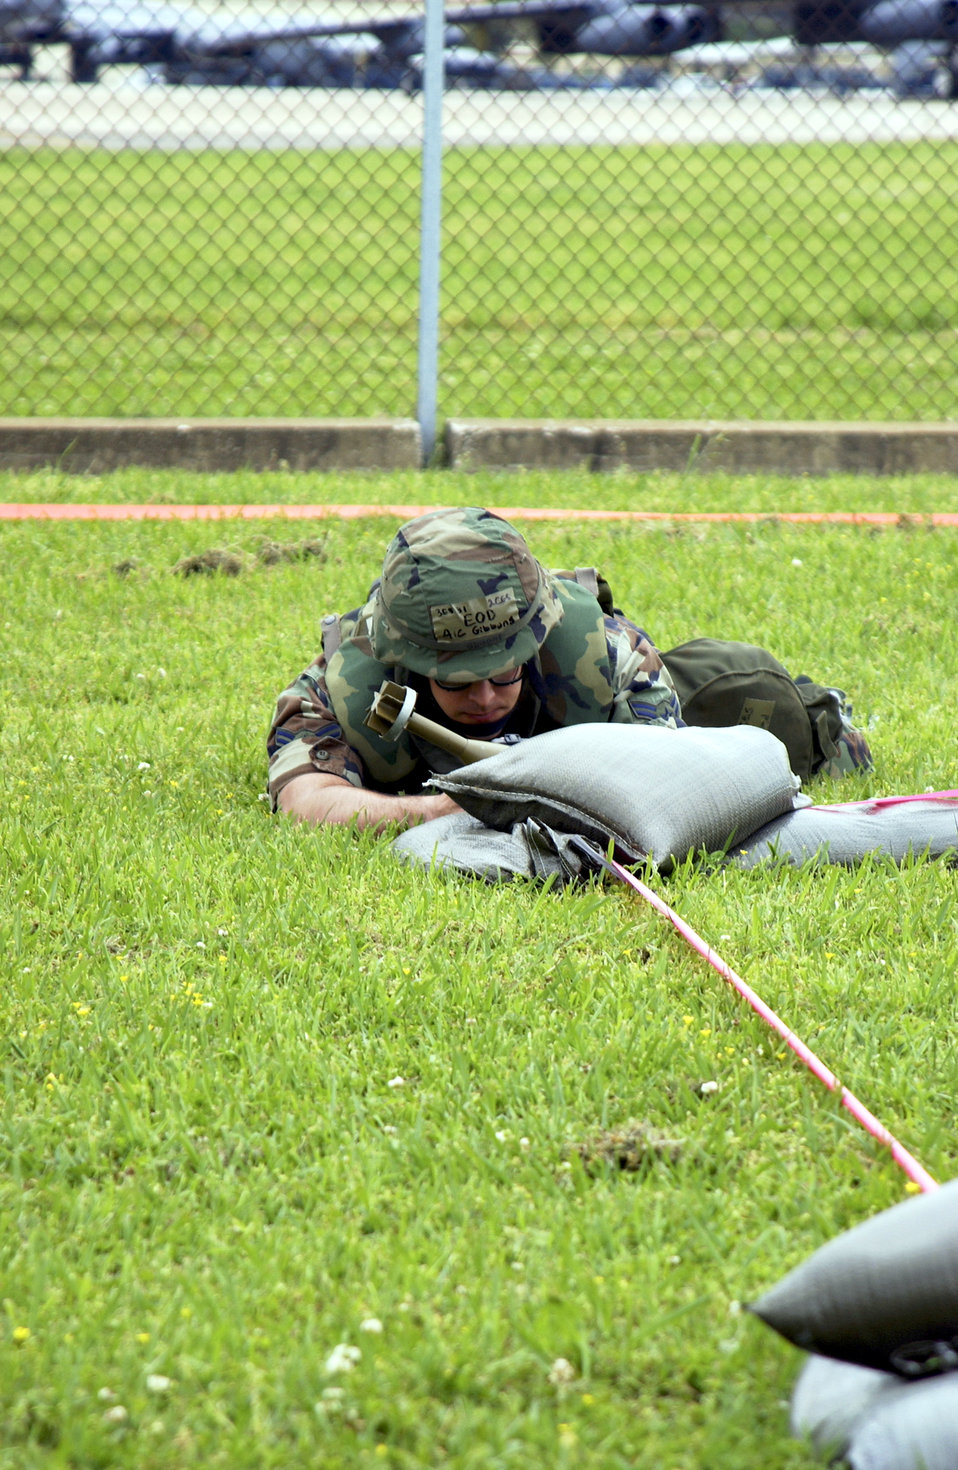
UXO

BARKSDALE AIR FORCE BASE, La. -- Airman 1st Class Richard Gibbons identifies simulated unexploded ordnance during a conventional operations readiness exercise here April 5. The exercise tests the wing's warfighting capability. Airman Gibbons is an explosive ordnance disposal specialist from the 2nd Civil Engineer Squadron.